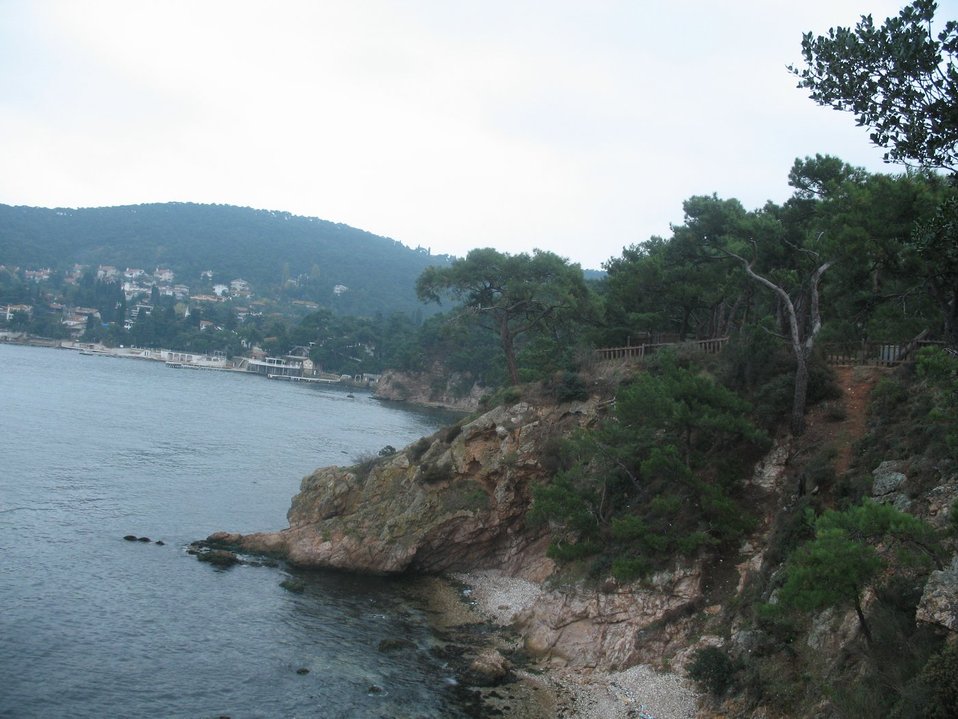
Princes' Islands,Prinkipo or Büyükada or Adalar